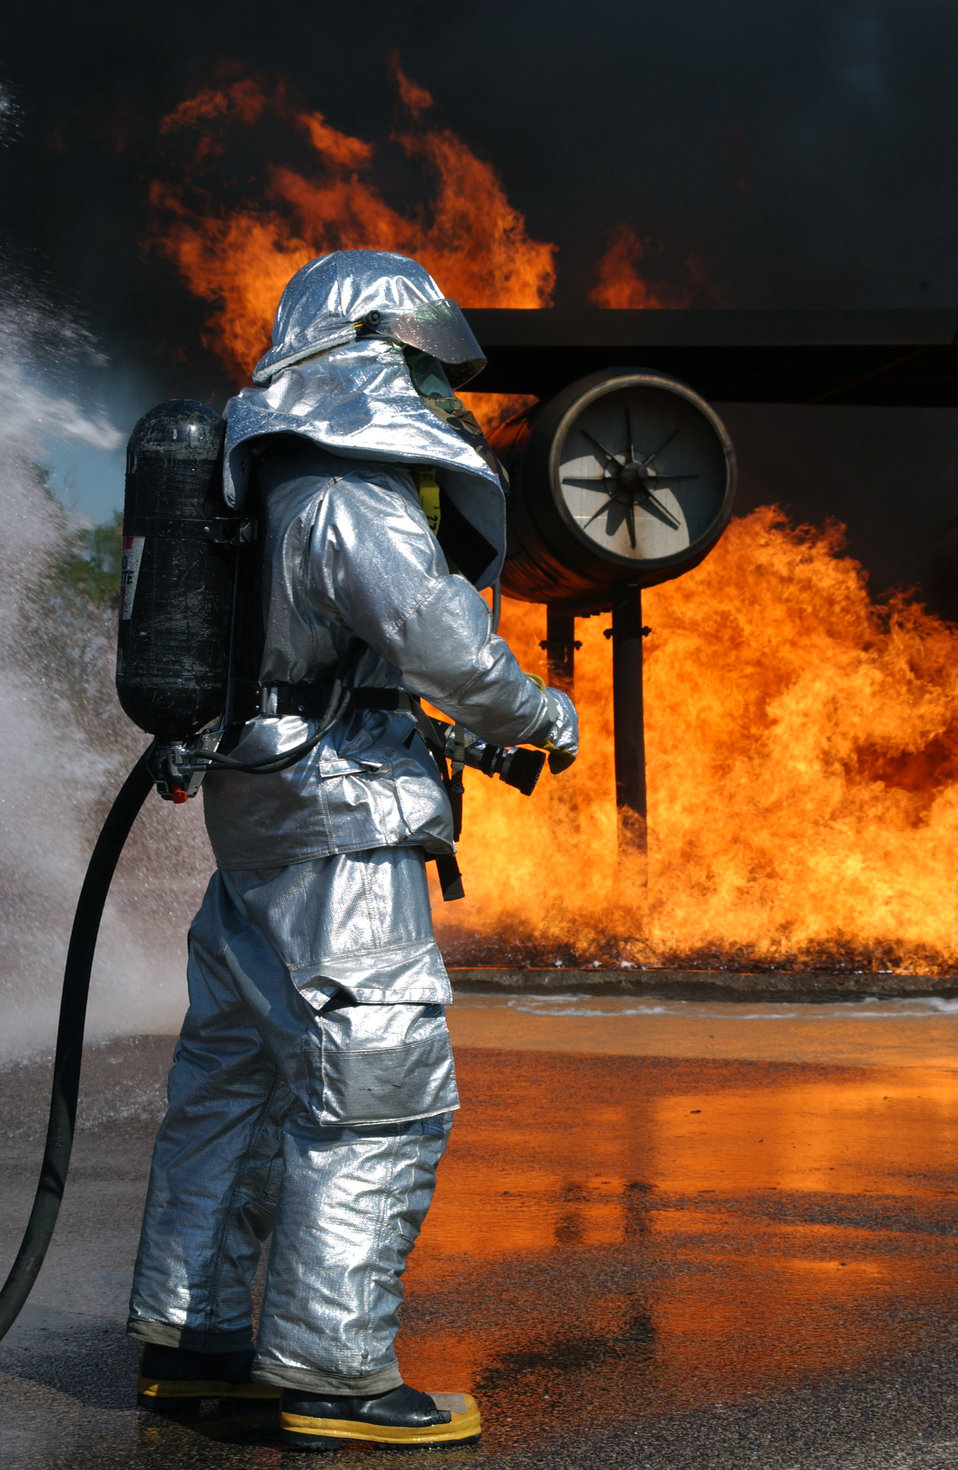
Fighting fires

VOLK FIELD AIR NATIONAL GUARD BASE, Wis. - A firefighter from the 167th Airlift Wing in Martinsburg, W. Va., prepares to fight a fire during a readiness training exercise here Sept. 21. The West Virginia Air National Guardsman was responding to a simulated aircraft accident.